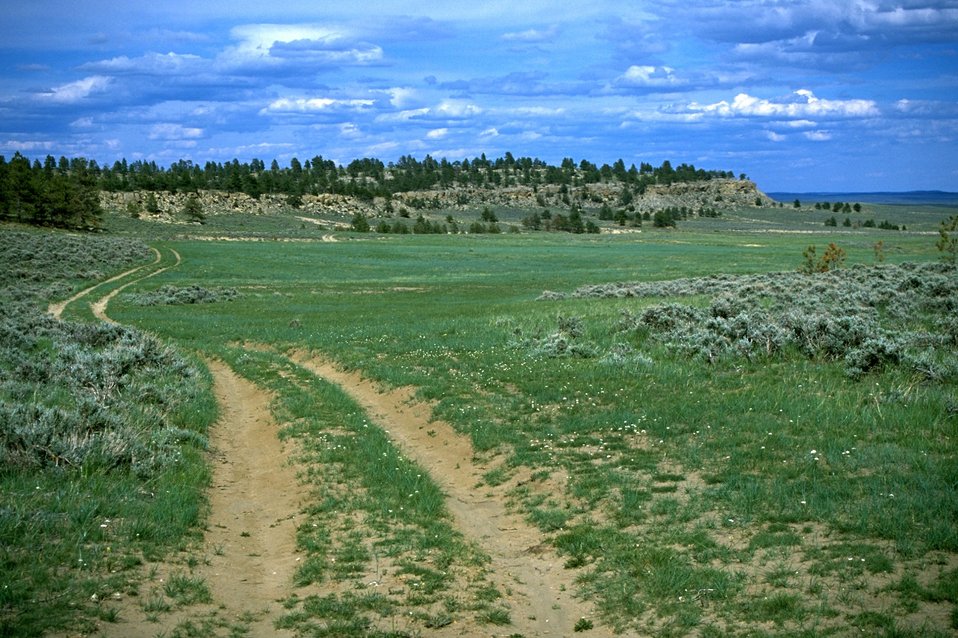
Sagebrush and grass along a trail through the Acton Recreation Area